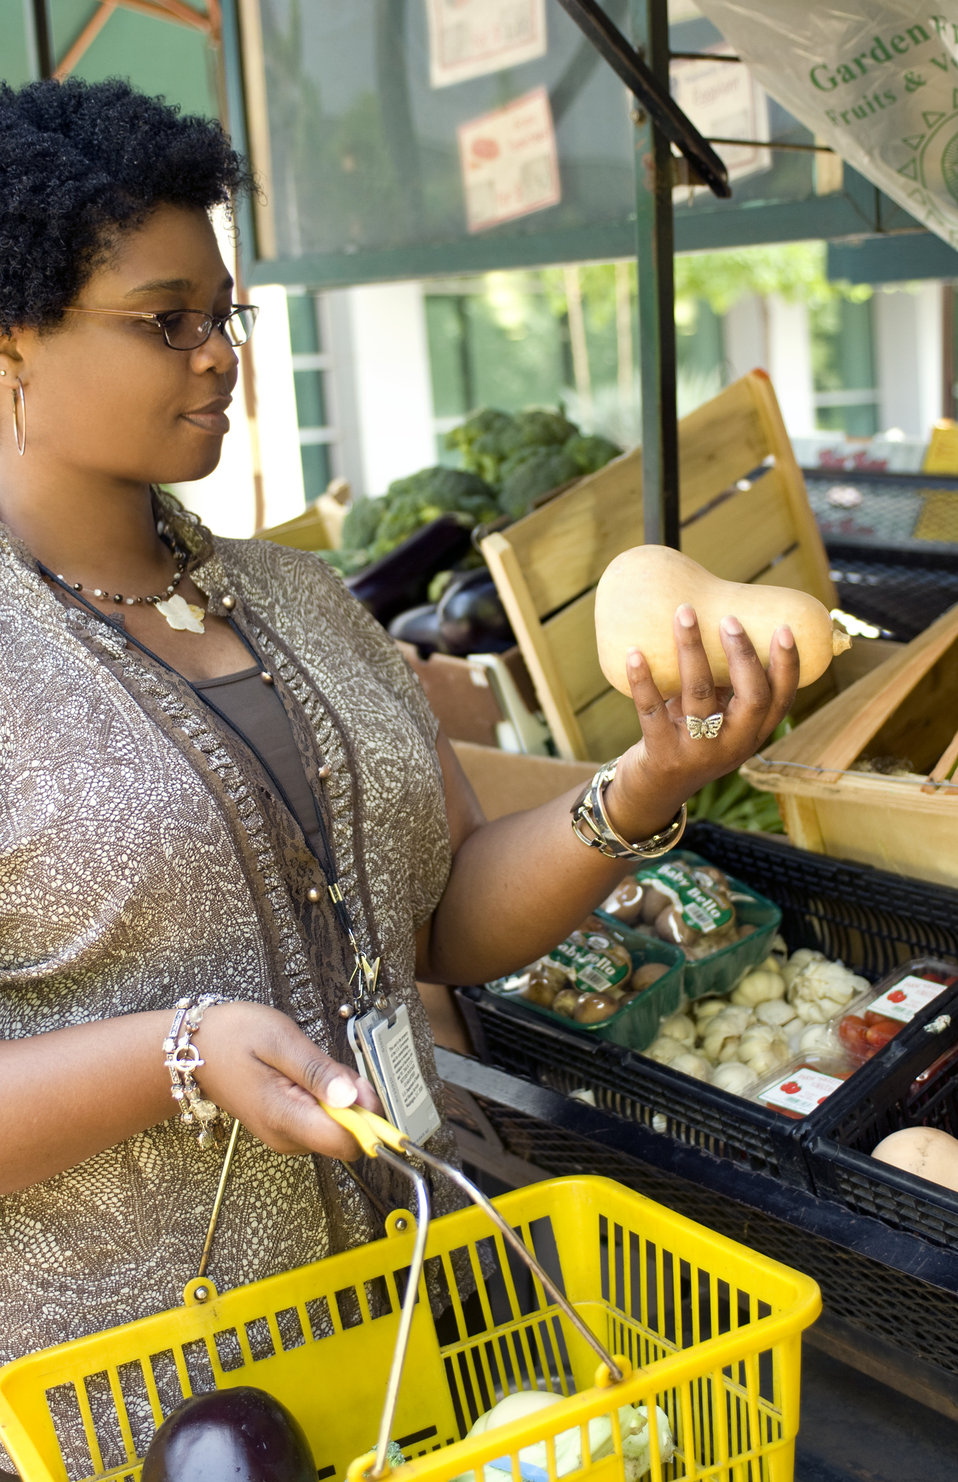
This photograph depicts a woman shopping at a mobile produce market, making healthy food choices from an array of fresh fruits and vegetables. High in its vitamin C and fiber content, here she was shown inspecting a squash as a possible purchase. After having made her choices, he had placed his selections into a yellow plastic basket, which she carried by its handles in her right hand.